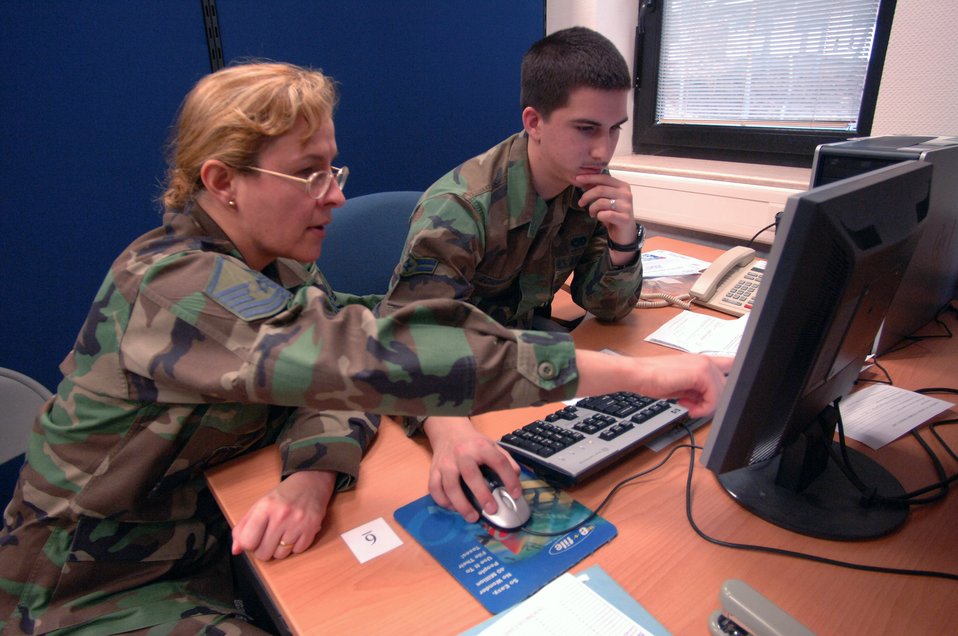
Tax Office

Master Sgt. Mikaela Grogg assists Airman 1st Class Michael Schindler in filing his annual taxes at the tax office on Ramstein Air Base, Germany, Feb. 4. Sergeant Grogg is a volunteer tax assistant assigned to the 435th Mission Support Squadron. Airman Schindler is with the 723d Air Mobility Squadron.